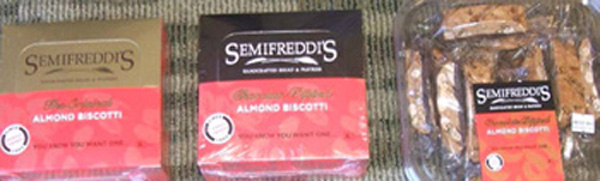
RECALLED – Biscotti

September 16, 2013 – Product Recall – Semifreddi's Announces Voluntary Recall of Almond Biscotti and Chocolate Dipped Almond Biscotti for Undeclared Milk and Soy.